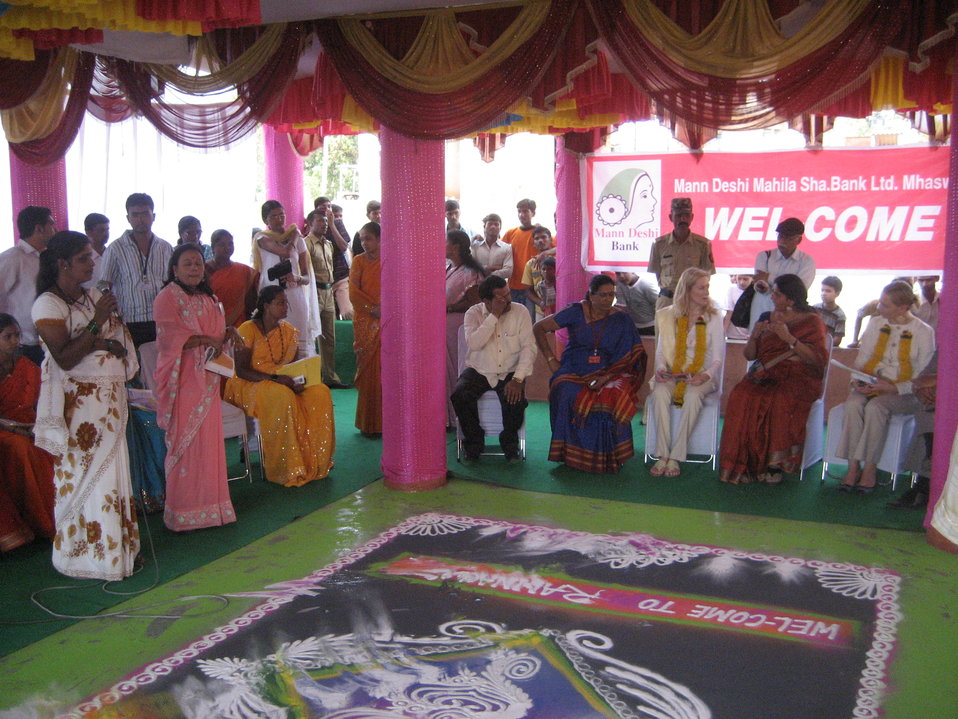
Lael Brainard's Visit to India

On Wednesday, March 2, outside the city of Pune in Maharashtra, India, Under Secretary Lael Brainard visited Mann Deshi Bank, a regulated cooperative bank run by and for women. With more than 100,000 customers, Mann Deshi is the largest microfinance bank in Maharashtra and a pioneer in micro-financing, offering its clients individual and group loans, savings and pension plans.